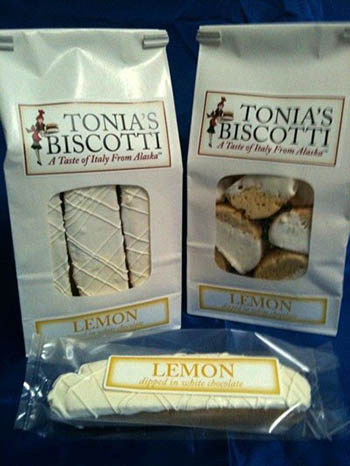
RECALLED – Lemon Biscotti Dipped in White Chocolate

January 3, 2014 – Product Recall – Tonia’s Biscotti II LLC Issues Allergy Alert on Undeclared Wheat, Milk, and Soy in Tonia’s Biscotti Sampler Bags, Lemon Biscotti Dipped in White Chocolate Bags, and Individually Wrapped Biscotti of All Flavors.